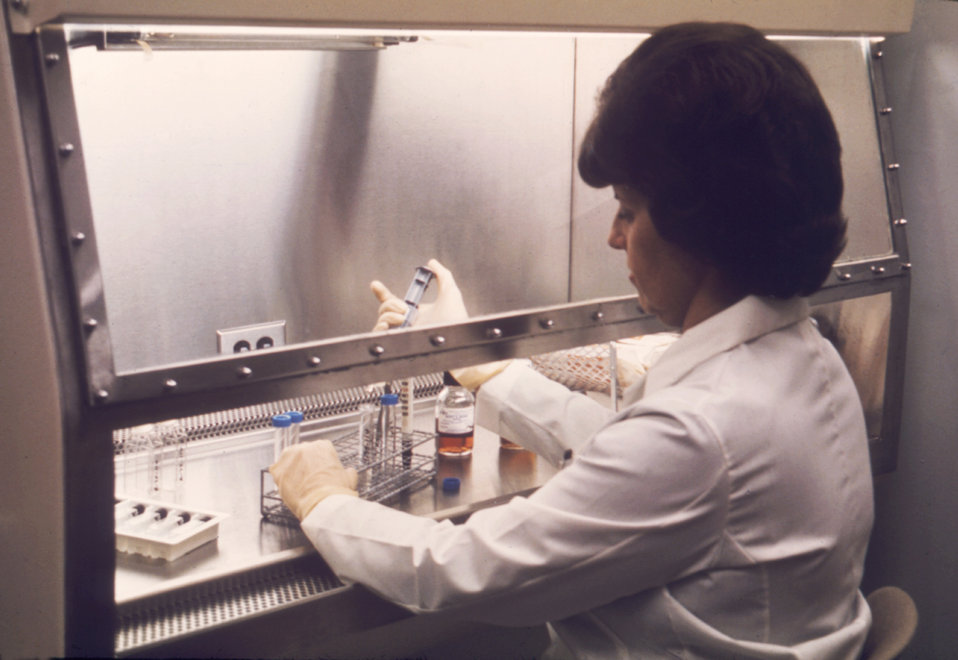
This CDC laboratory technician is performing analyses on amniotic fluids.